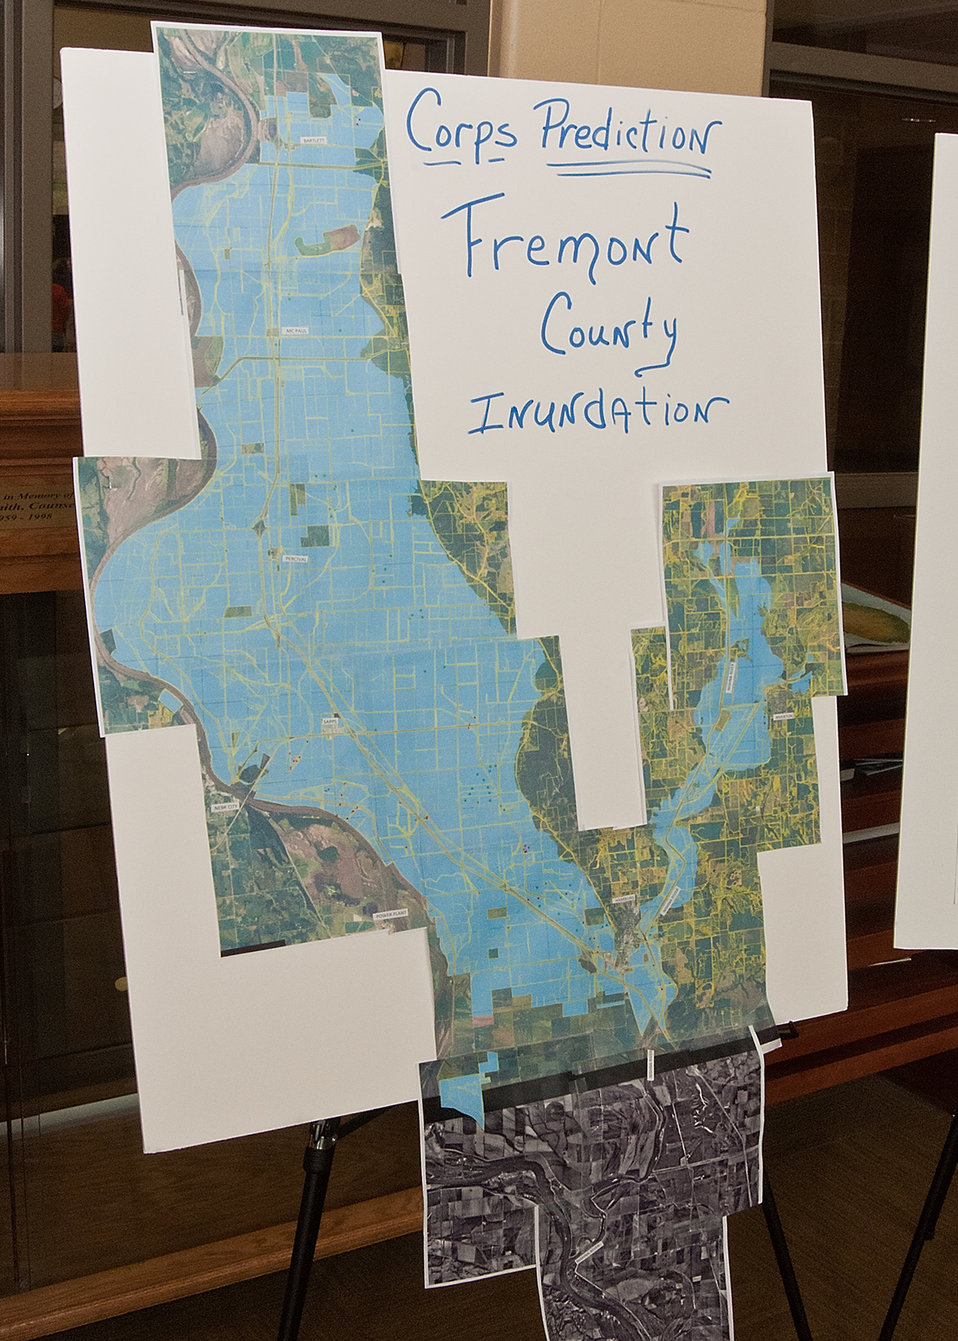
An Army Corps of Engineers Inundation Map representing the possible coverage of the Missouri River floodwaters posted during a town hall meeting held by Agriculture Secretary Tom Vilsack at the Glenwood Community High School in Glenwood, Iowa on Thursday, June 16, 2011. Farmers, local and regional media listened and questioned Secretary Vilsack on the cause of the floodwaters along the Missouri River affecting Iowa and Nebraska. Secretary Vilsack offered advice and assistance available through the United States Department of Agriculture and other federal agencies.